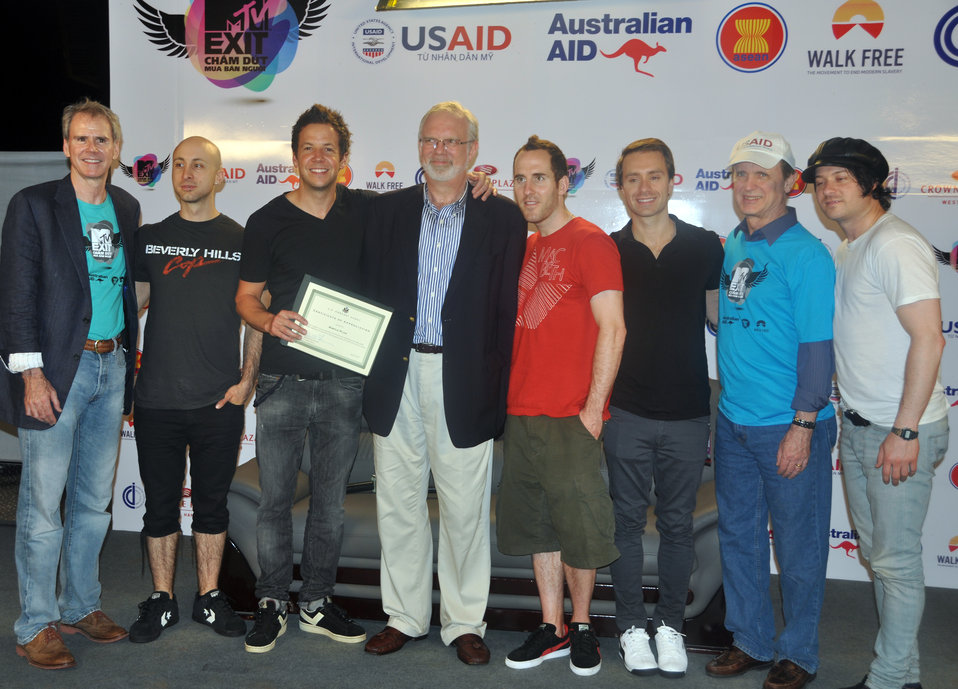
Simple Plan receive certificate from U.S. Ambassador David Shear at MTV EXIT concert against human trafficking and exploitation

USAID supports MTV EXIT concert against human trafficking and exploitation